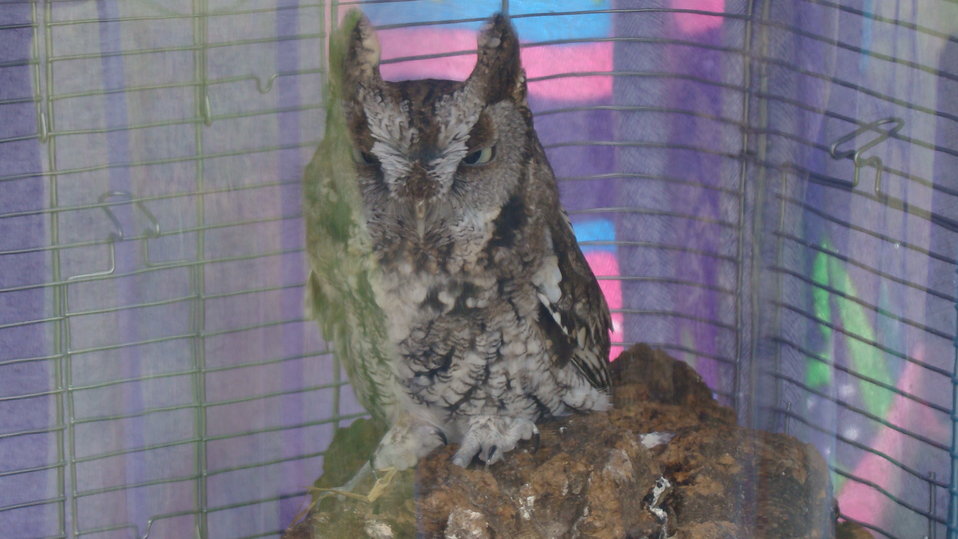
Rappahannock River Valley NWR 15th Anniversary

Wildbunch Wildlife Refuge displays an Eastern Screech Owl.